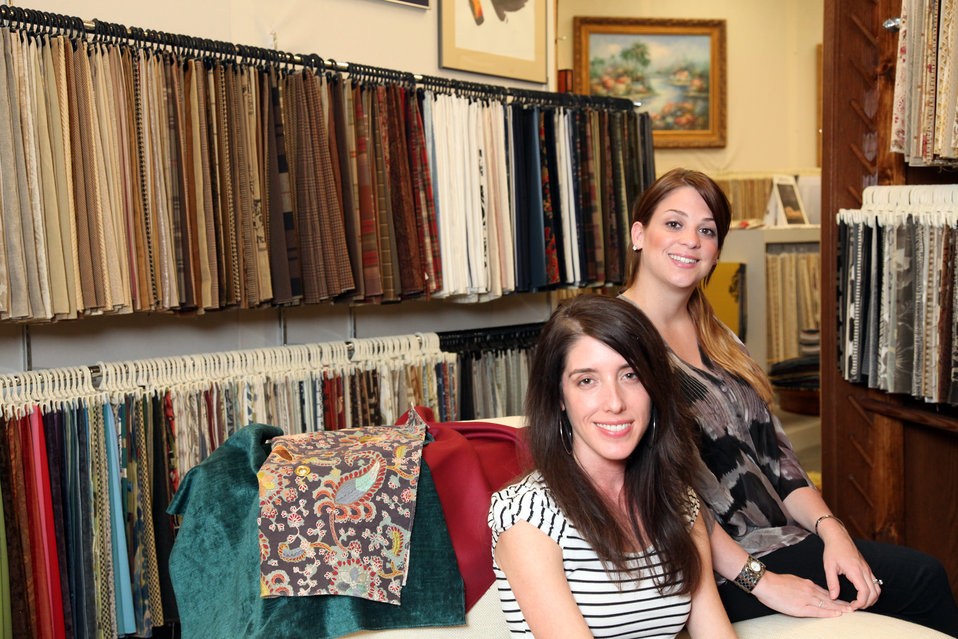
KBK to the Trade

Thanks to the City Lights program, this design shop is saving an estimated 25,500 kilowatt-hours and $2,000 on electricity bills each year.